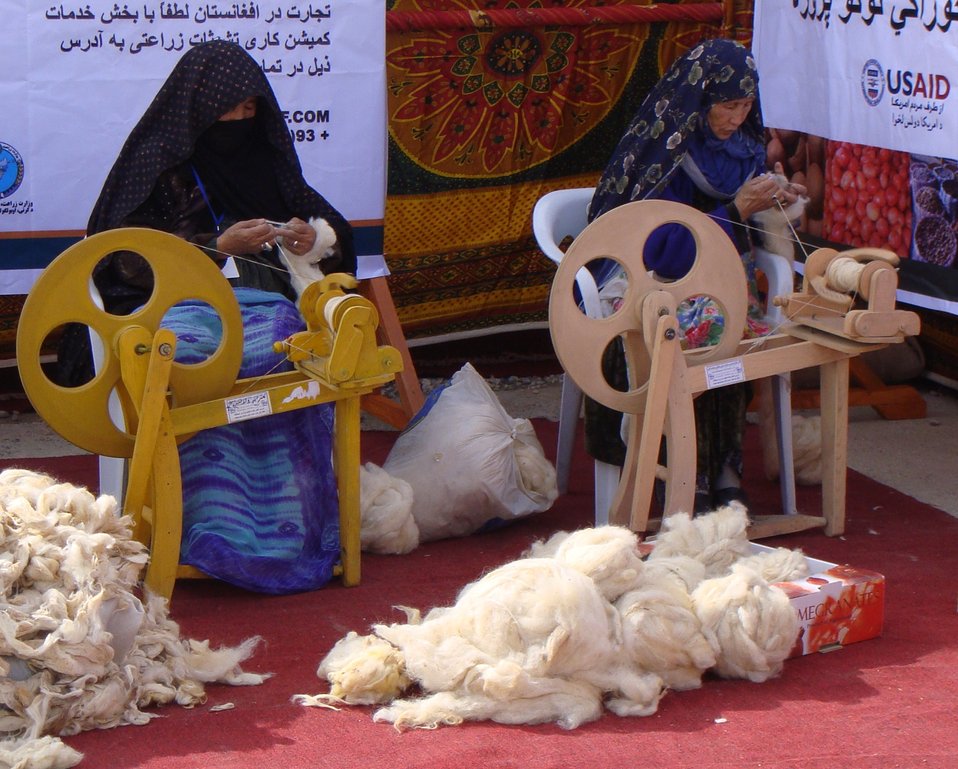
Mazar AgFair 2009